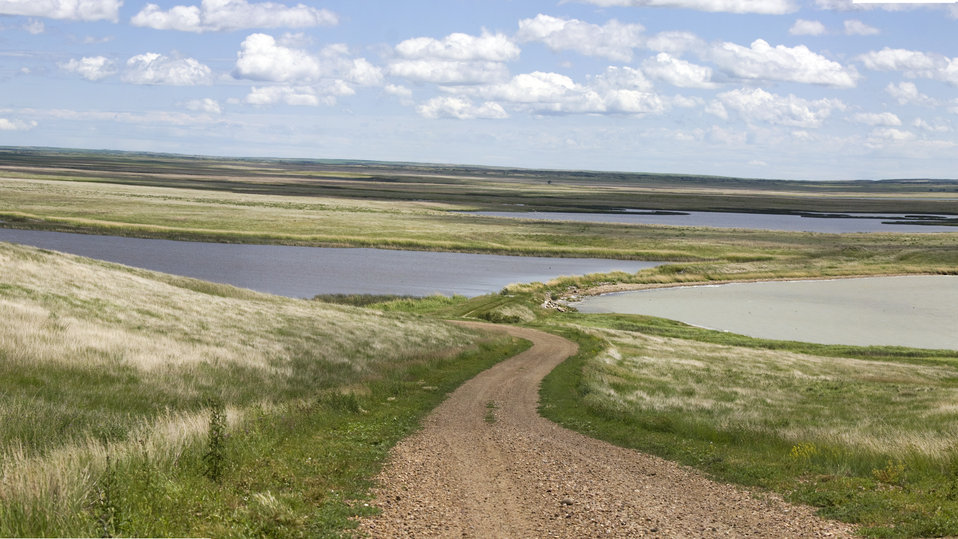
Medicine Lake Vantage Point - Across great stretches of the Northern Great Plains, leveraged viewing angles are rare. When you find one, you can see for many miles.

Location: Medicine Lake NWR

Credit: Jamieson Scott / USFWS

Photo Contest Entry #22